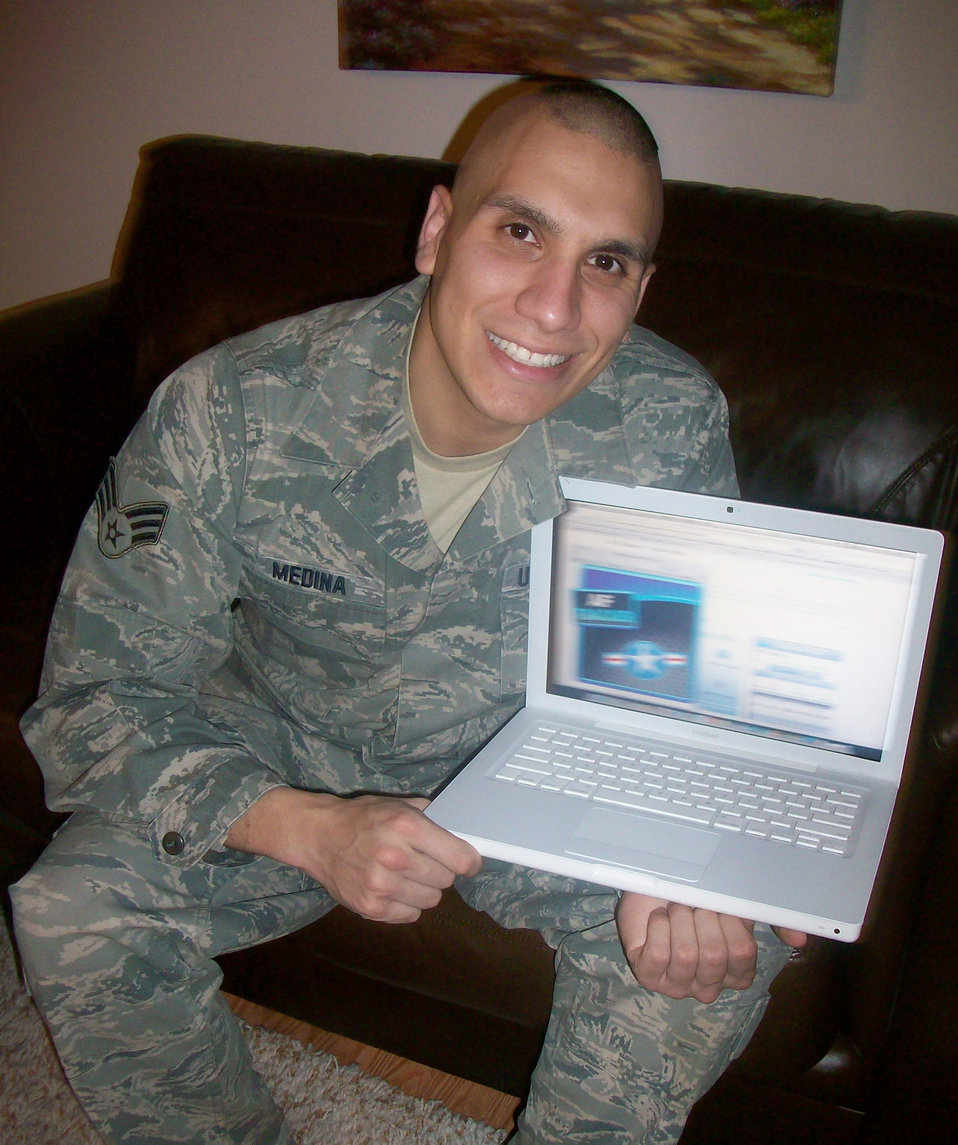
Airman develops PT calculator app

Senior Airman Julio Medina developed AF Tracker, a free application available through iTunes with a PT calculator capability and an option to e-mail the score to anyone from the application. Airman Medina is a security forces member assigned to the 6th Space Warning Squadron at Cape Cod, Mass.